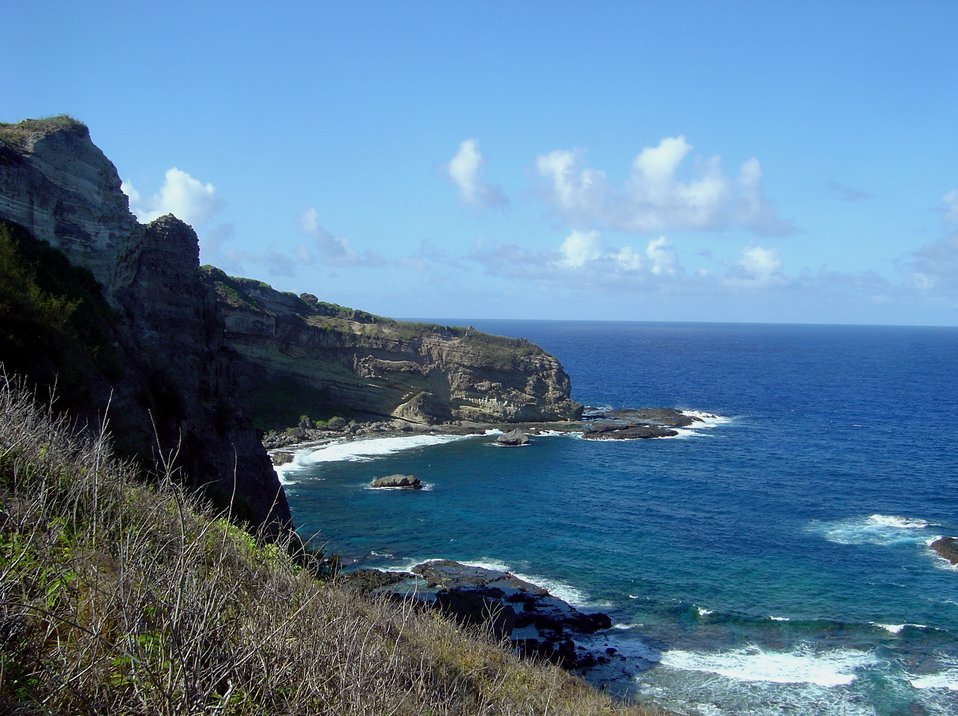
Coast near Forbidden Island, Saipan.